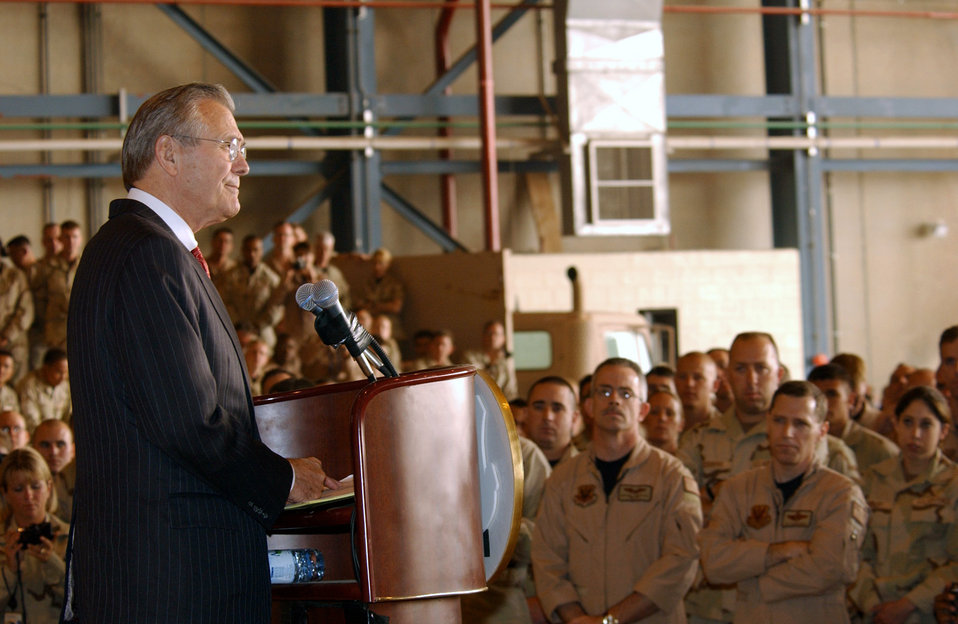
Rumsfeld visit

OPERATION IRAQI FREEDOM -- Secretary of Defense Donald Rumsfeld speaks to troops during a meeting in a hangar at Prince Sultan Air Base, Saudi Arabia on April 29. Rumsfeld spoke about Operation Iraqi Freedom, thanked the audience for their contributions and then answered questions. This stop was part of a trip through the region to meet with troops and consult with officials from host nations.